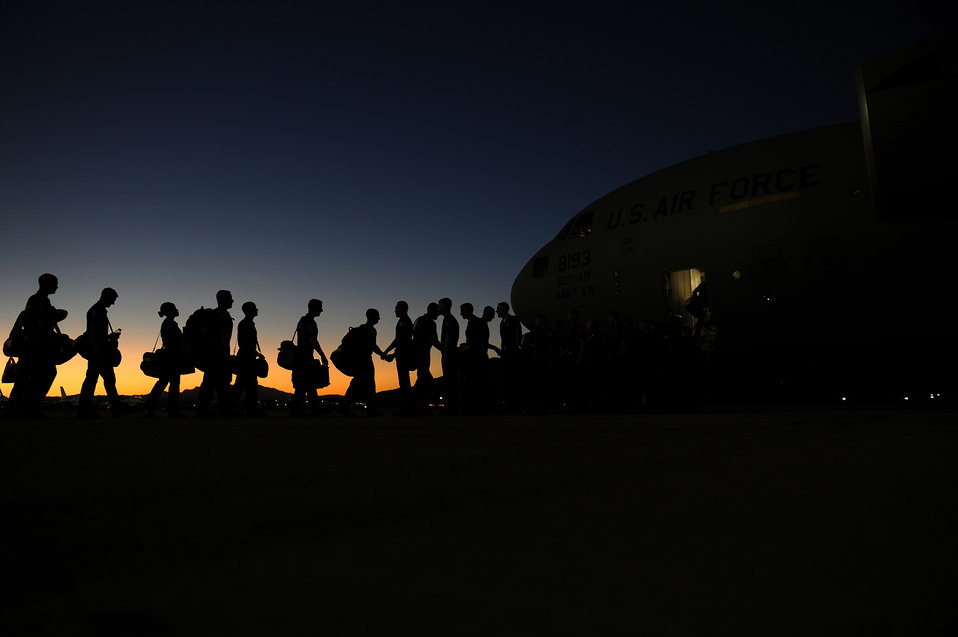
All aboard!

Members of the Thunderbirds, the Air Force’s air demonstration squadron, board a C-17 Globemaster III at Nellis Air Force Base, Nev., Aug. 11, 2011, to depart for a Portsmouth, N.H., air show. The Thunderbirds perform precision aerial maneuvers demonstrating the capabilities of Air Force high performance aircraft to people throughout the world.